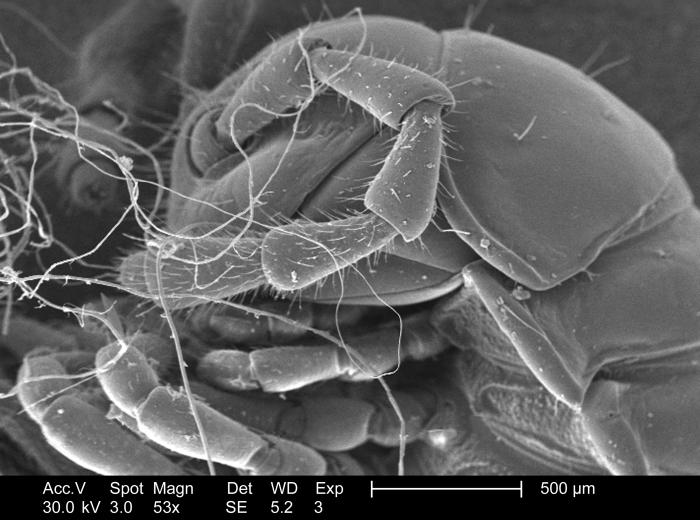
Magnified a mere 53x, this scanning electron micrograph (SEM) revealed the anatomical modularity if this millipede found deceased on the ground in the Decatur, Georgia suburbs. The firm, protective exoskeleton is composed of a polysaccharide known as chitin that had been bound to various protein molecules, all of which having been secreted by the organism during its development.